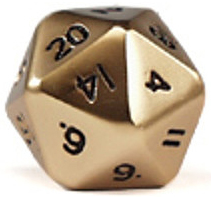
A single golden d20 die.